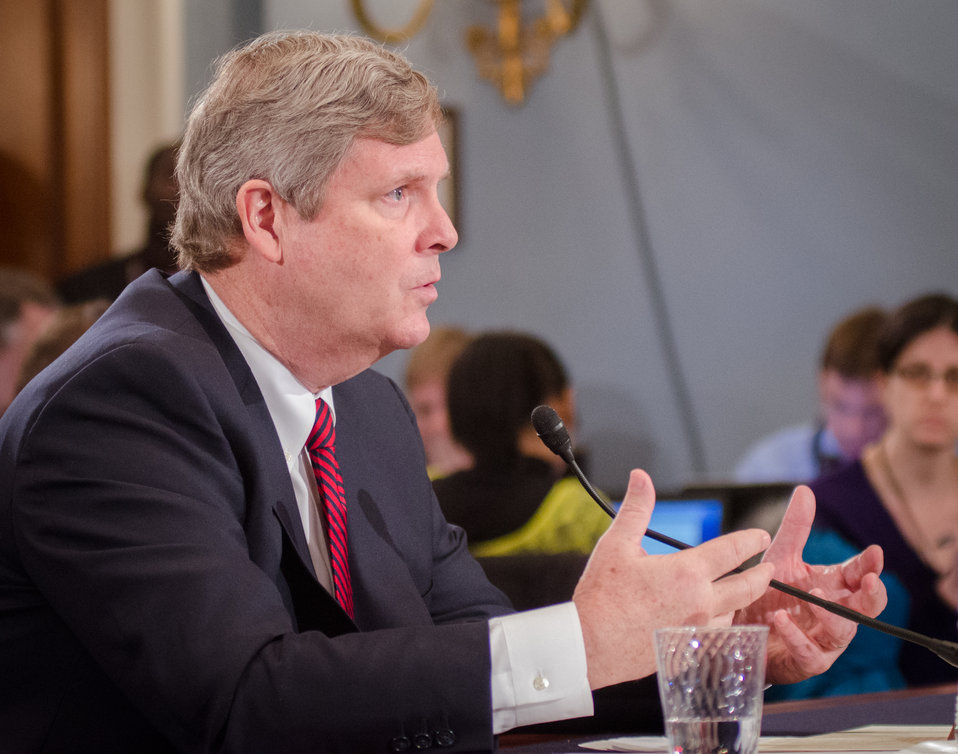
Agriculture Secretary Tom Vilsack testifies before the House Agriculture Committee regarding the “State of the Rural Economy“ at the Longworth House Office Building in Washington, D.C. on Tuesday, Mar. 5, 2013.